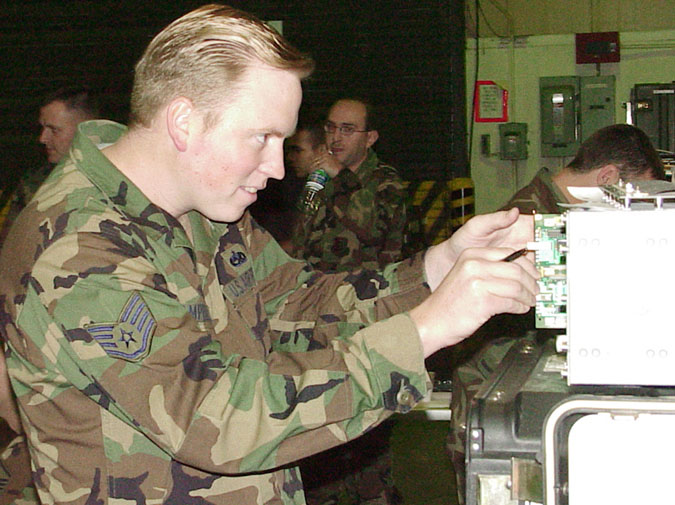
Hands-On Training

ROBINS AIR FORCE BASE, Ga. -- Staff Sgt. John McCampbell, from the 28th Communications Squadron Ellsworth Air Force Base, S.D., was learning the ins and outs of the new Theater-Deployable Communications equipment package during a two-week hands-on course here.